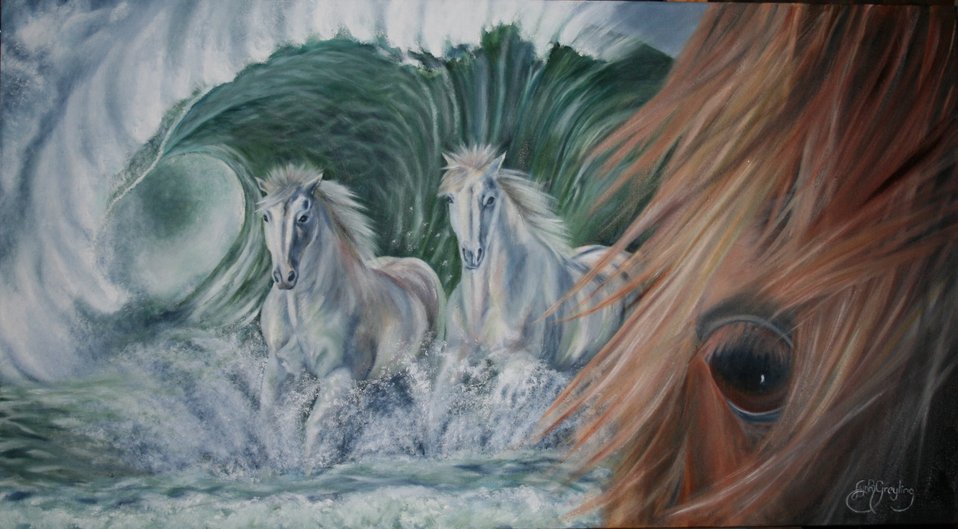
Horses in the surf.